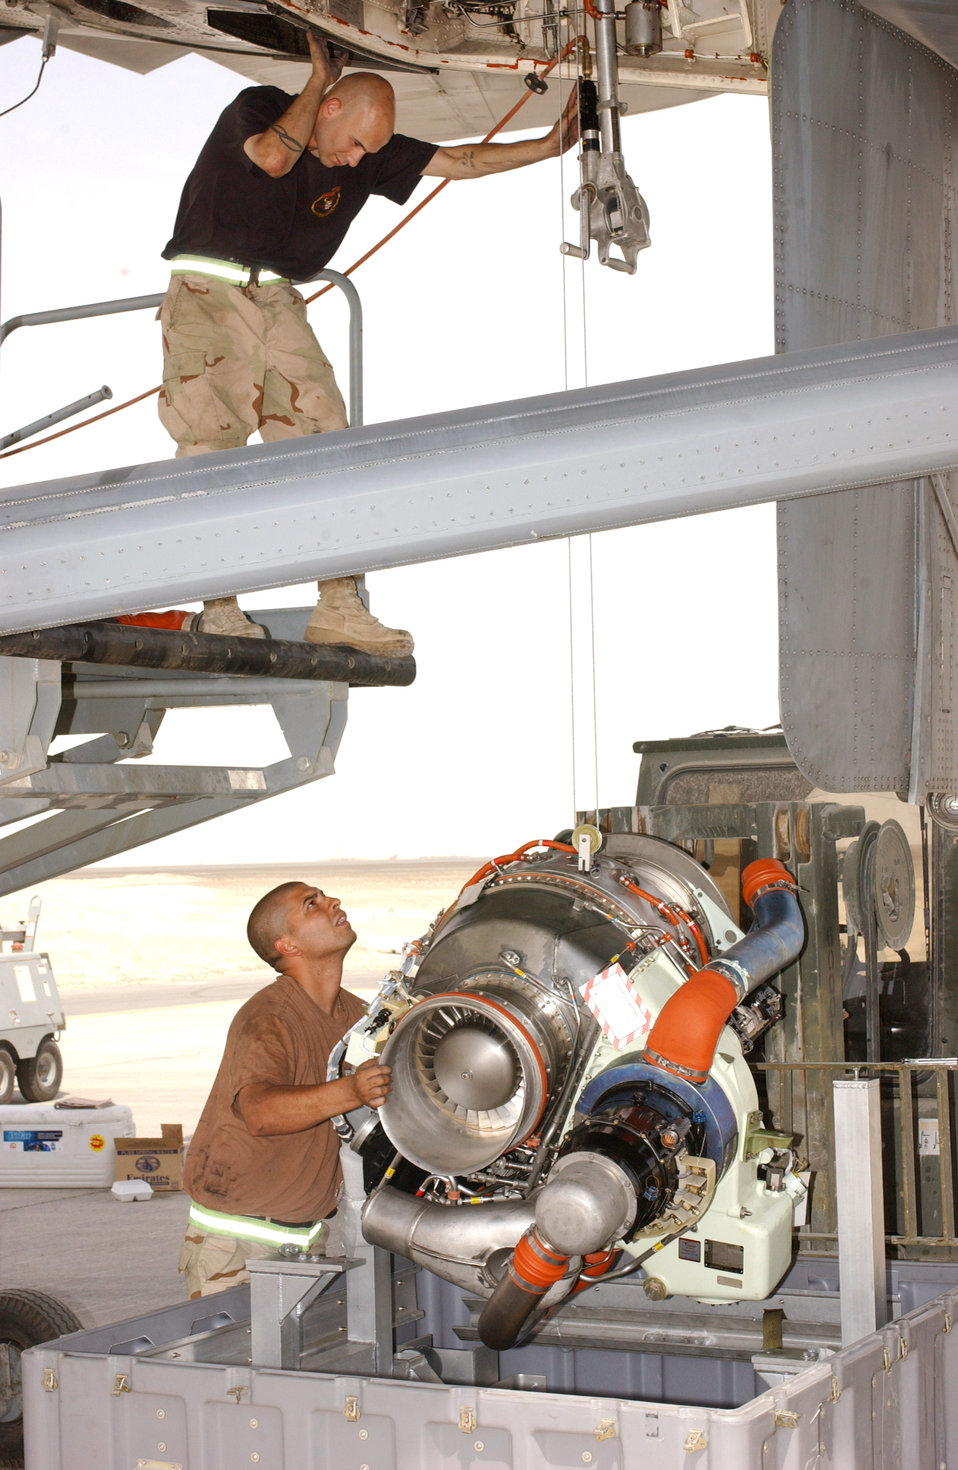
KC-10 air refueling sorties vital to combat missions

SOUTHWEST ASIA -- Staff Sgt. Erik Barnhart (on the stand) and Airman 1st Class Jose Cabiya change an auxiliary power unit on a KC-10 Extender. The 10th Aircraft Maintenance Unit's Airmen helped get the refueler airborne allowing fighter aircraft needing fuel to continue to provide cover for Soldiers on the ground in Iraq on June 7.